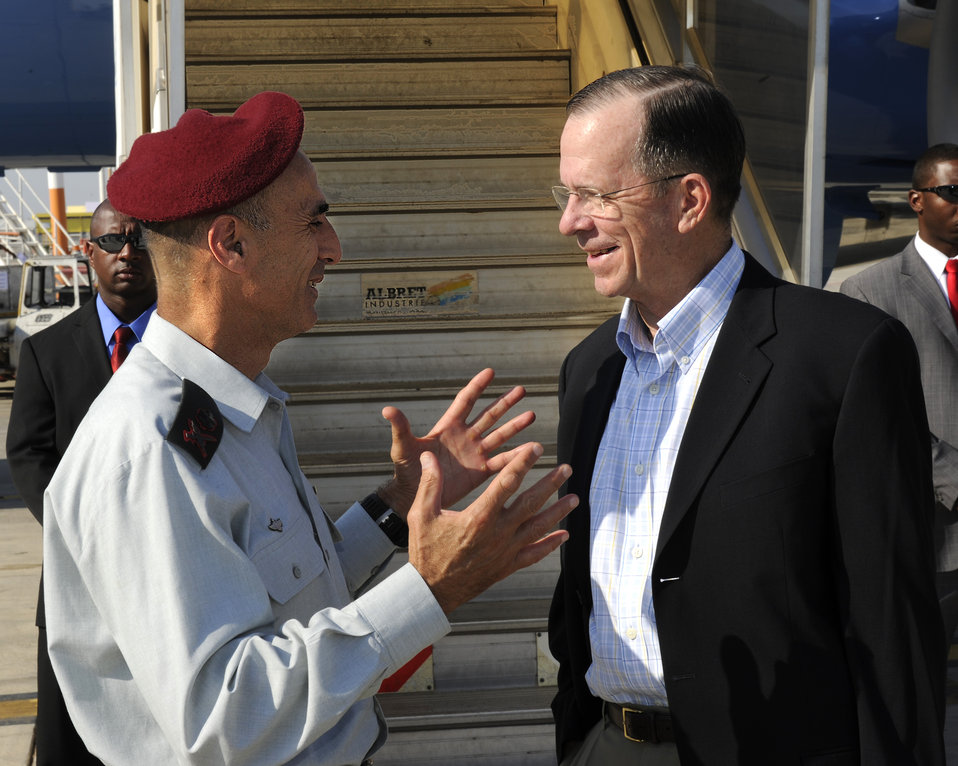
Admiral Mullen Is Welcomed to Israel By General Shamnii

Chairman of the Joint Chiefs of Staff of the United States Military, Admiral Michael G. Mullen, is welcomed to Israel by General Gadi Shamnii on July 18, 2011.